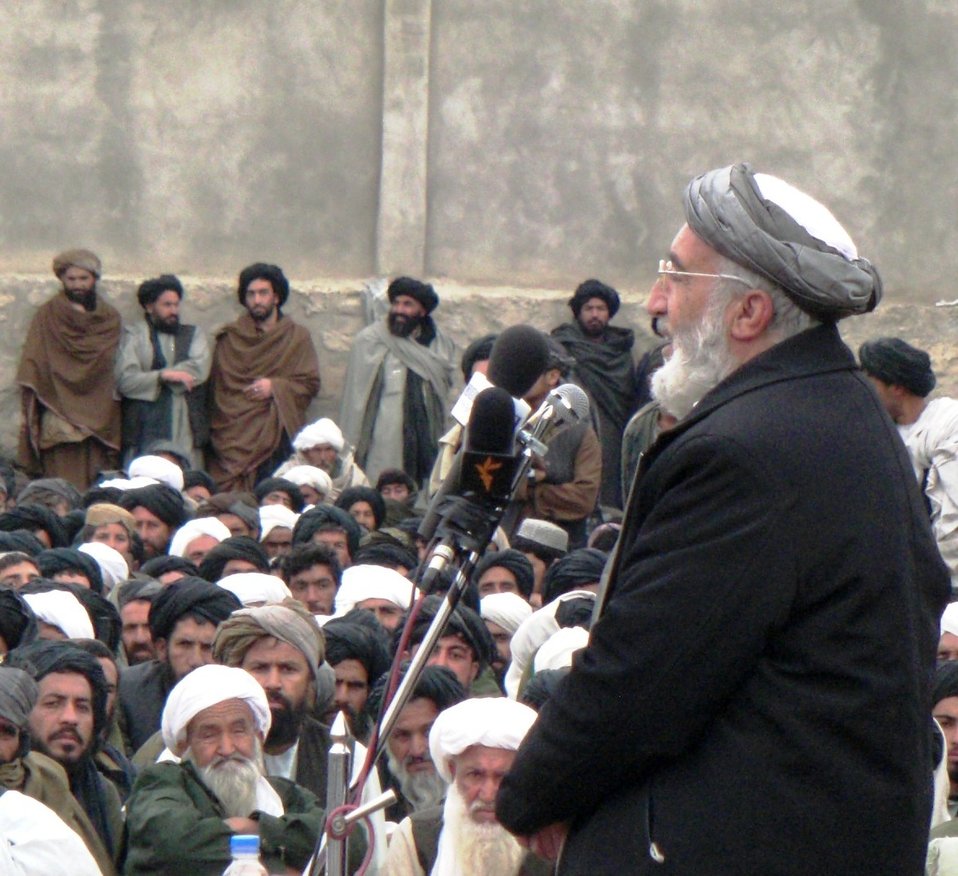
Shura in Musa Qala